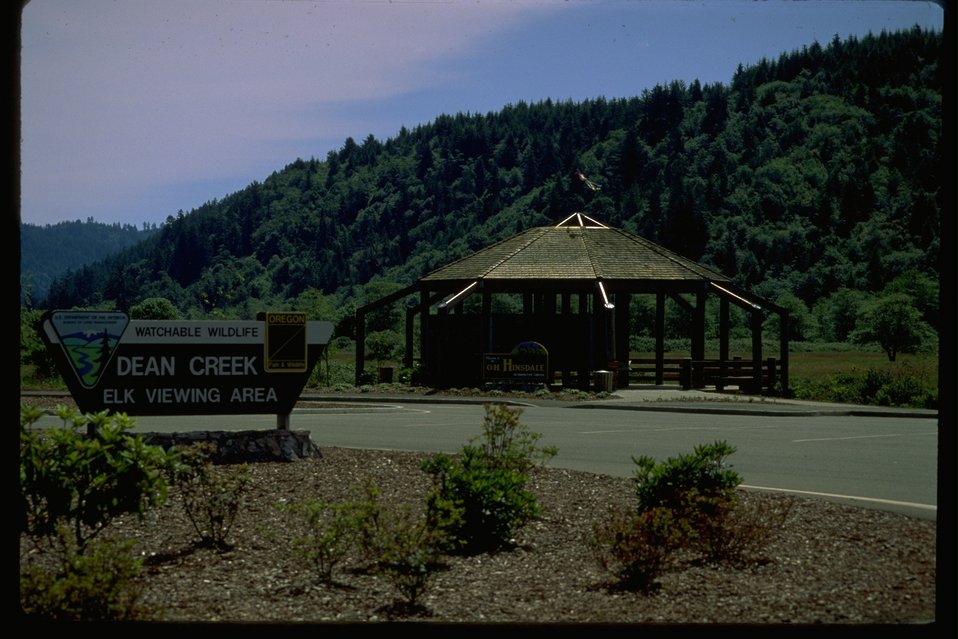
Dean Creek elk viewing area.